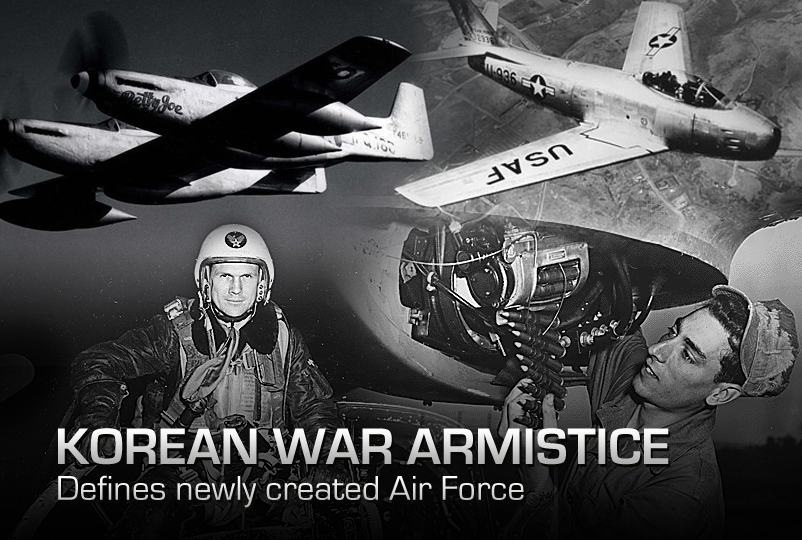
Korean War Armistice